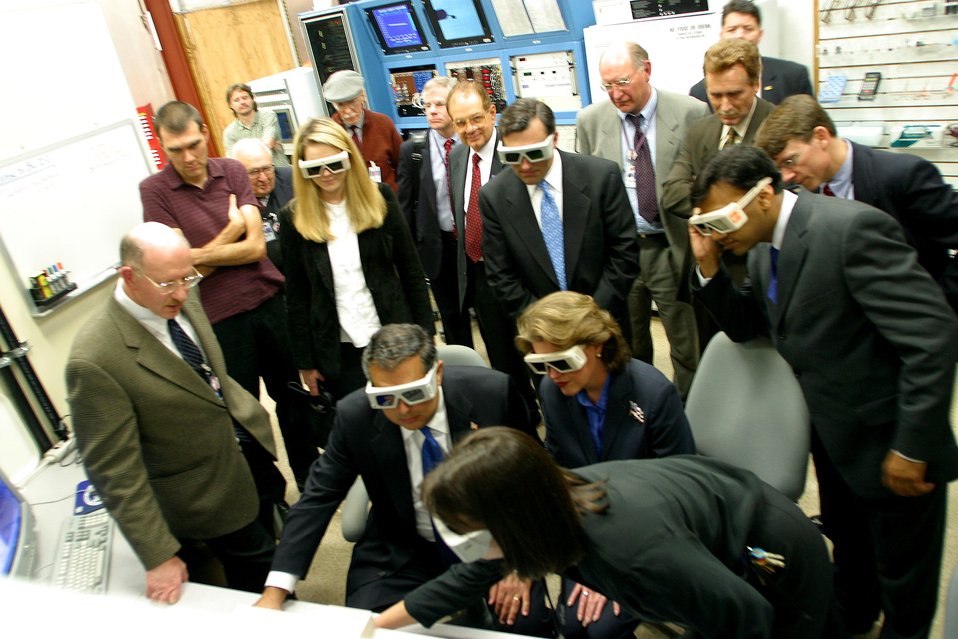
SECRETARY OF ENERGY ABRAHAM AT SLAC'S STANFORD SYNCHROTRON RADIATION LABORATORY.

SECRETARY AND MRS. ABRAHAM TOURED SLAC ON NOVEMBER 25, 2002 AND STOPPED TO OBSERVE A STRUCTURAL BIOLOGY EXPERIMENT AT THE FACILITY'S STANFORD SYNCHROTRON RADIATION LABORATORY (SSRL).